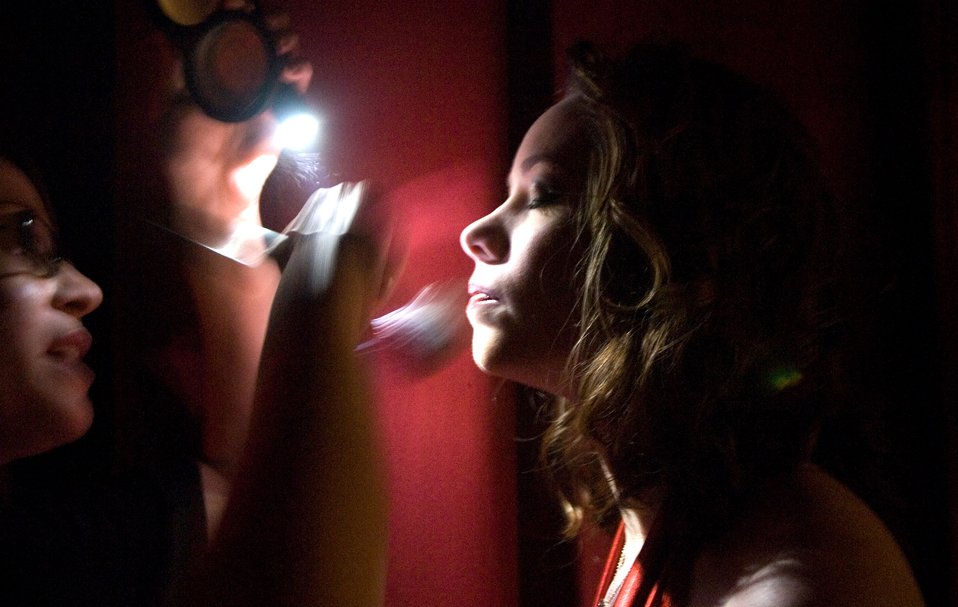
Airmen named the 'Best of the Best'

A make-up technician places some last-minute touches onto Irma Brown before she goes on stage to perform in the Tops in Blue Worldwide Talent competition on Lackland Air Force Base, Texas, Dec. 8.